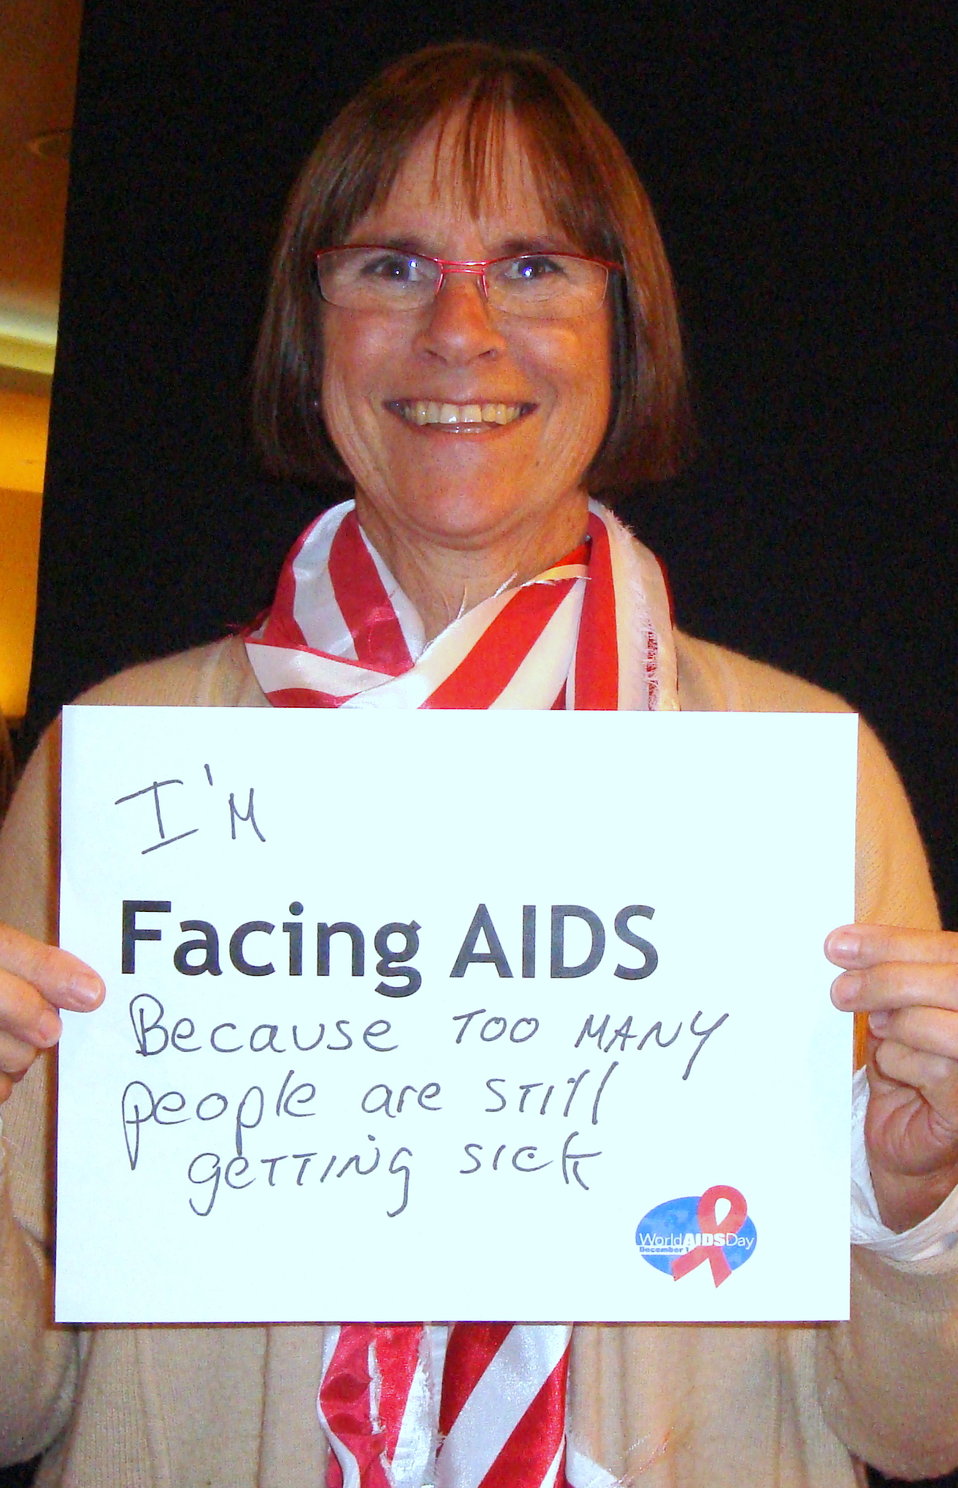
FacingAIDSCampaign 007